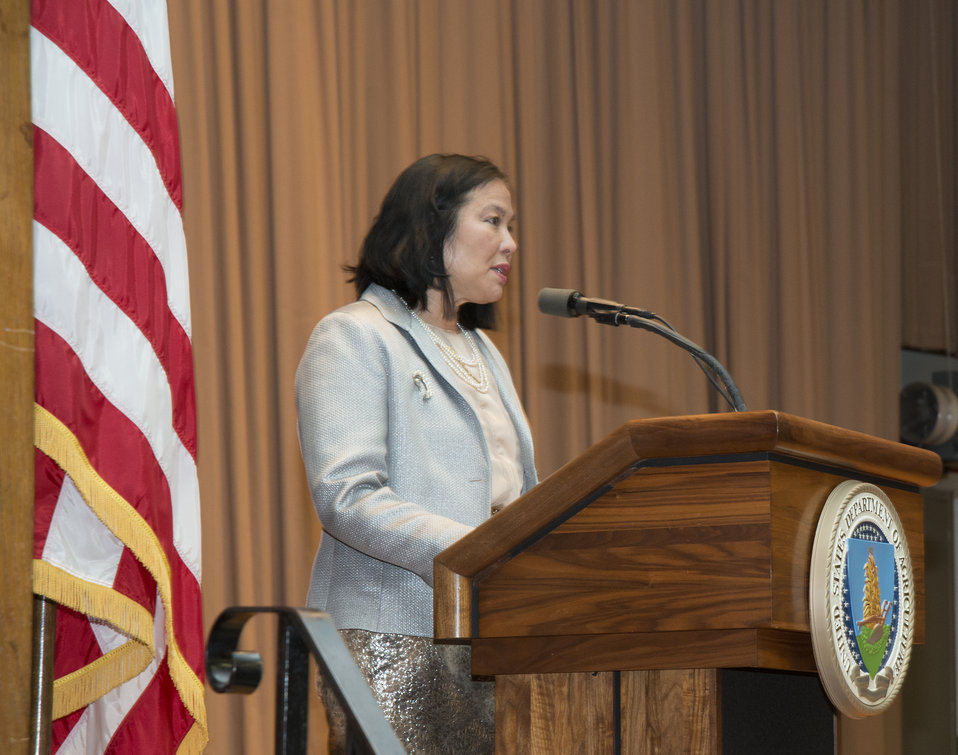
Office of Public Health Science (OPHS), Food Safety Inspection Service (FSIS) and Executive on Loan to the U.S. Department of Agriculture’s (USDA) WHIAPPI Deputy Assistant Administrator Dr. Vivian Chen speaks at USDA’s Women’s History Month Observance in the Jefferson Auditorium at USDA on Thursday, Mar. 13, 2014. The theme for this year’s observance is “Celebrating Women of Character, Courage, and Commitment”.